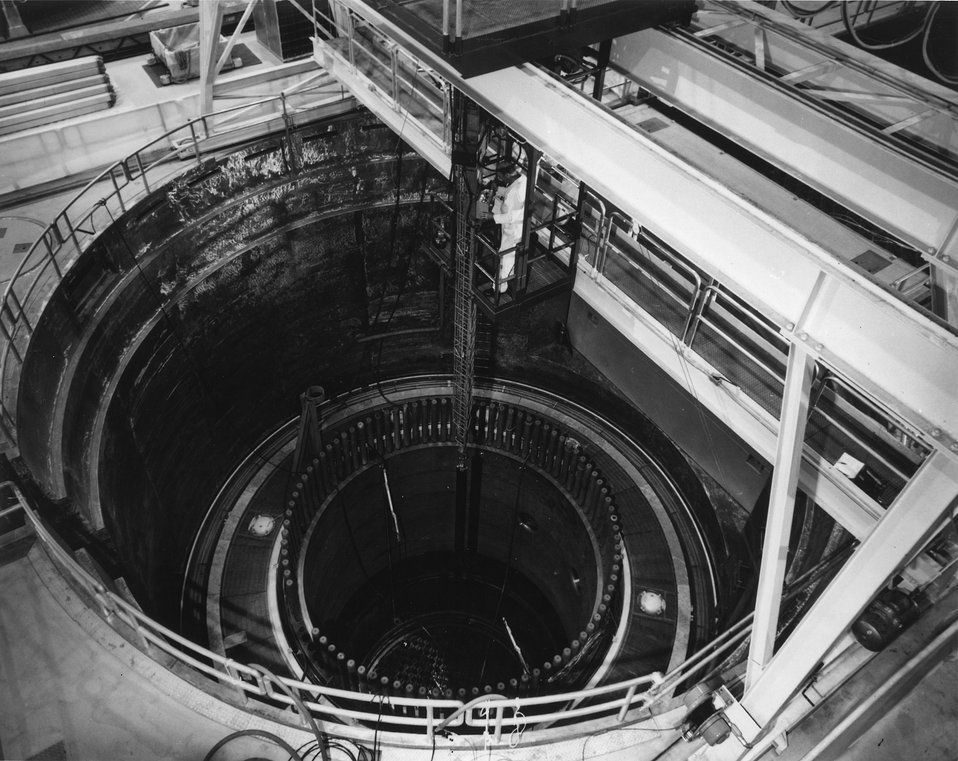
Brown's Ferry...Loading of uranium dioxide fuel into TVA's Browns Ferry Nuclear Power Plant, Unit 1. Circa 1974.